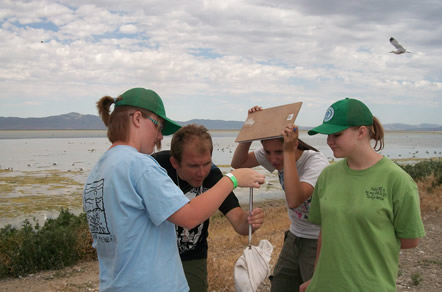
Students and YCC crew weigh California gull

Youth Conservation Crew assist Weber State University professor, John Cavitt, and his students conduct research on California gulls. Students and YCCs weigh a gull at Bear River Migratory Bird Refuge.